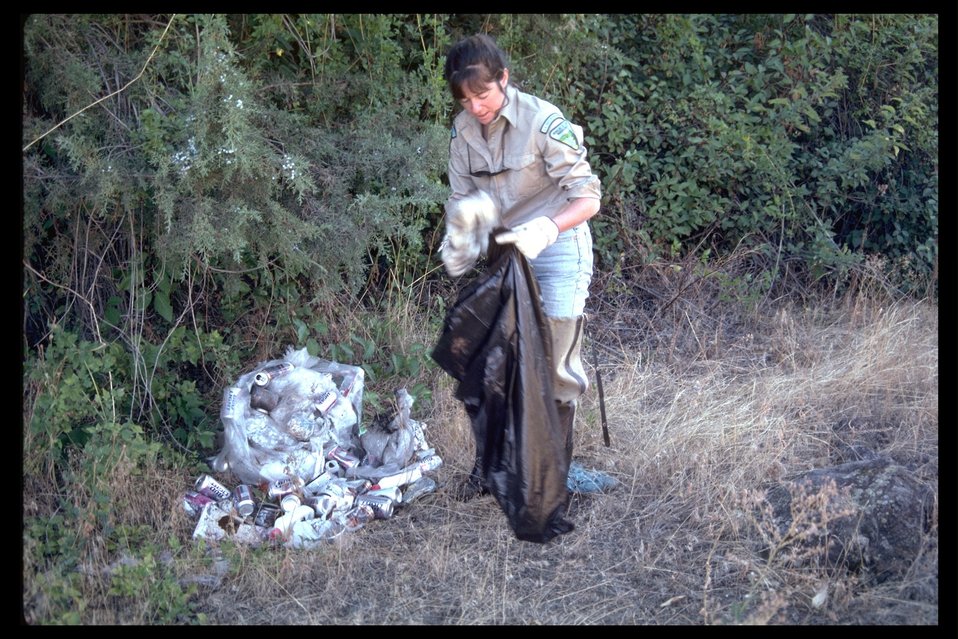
Mary Emerick, backcountry ranger, picks up trash in the Blitzen River WSA. (WSA 2-86E)